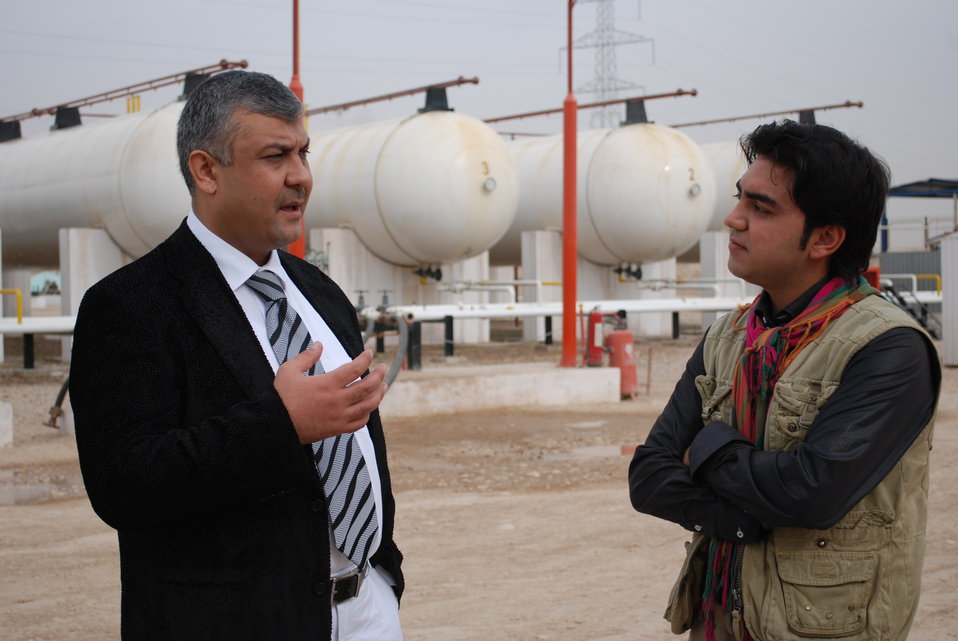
'On the Road' in Balkh Province